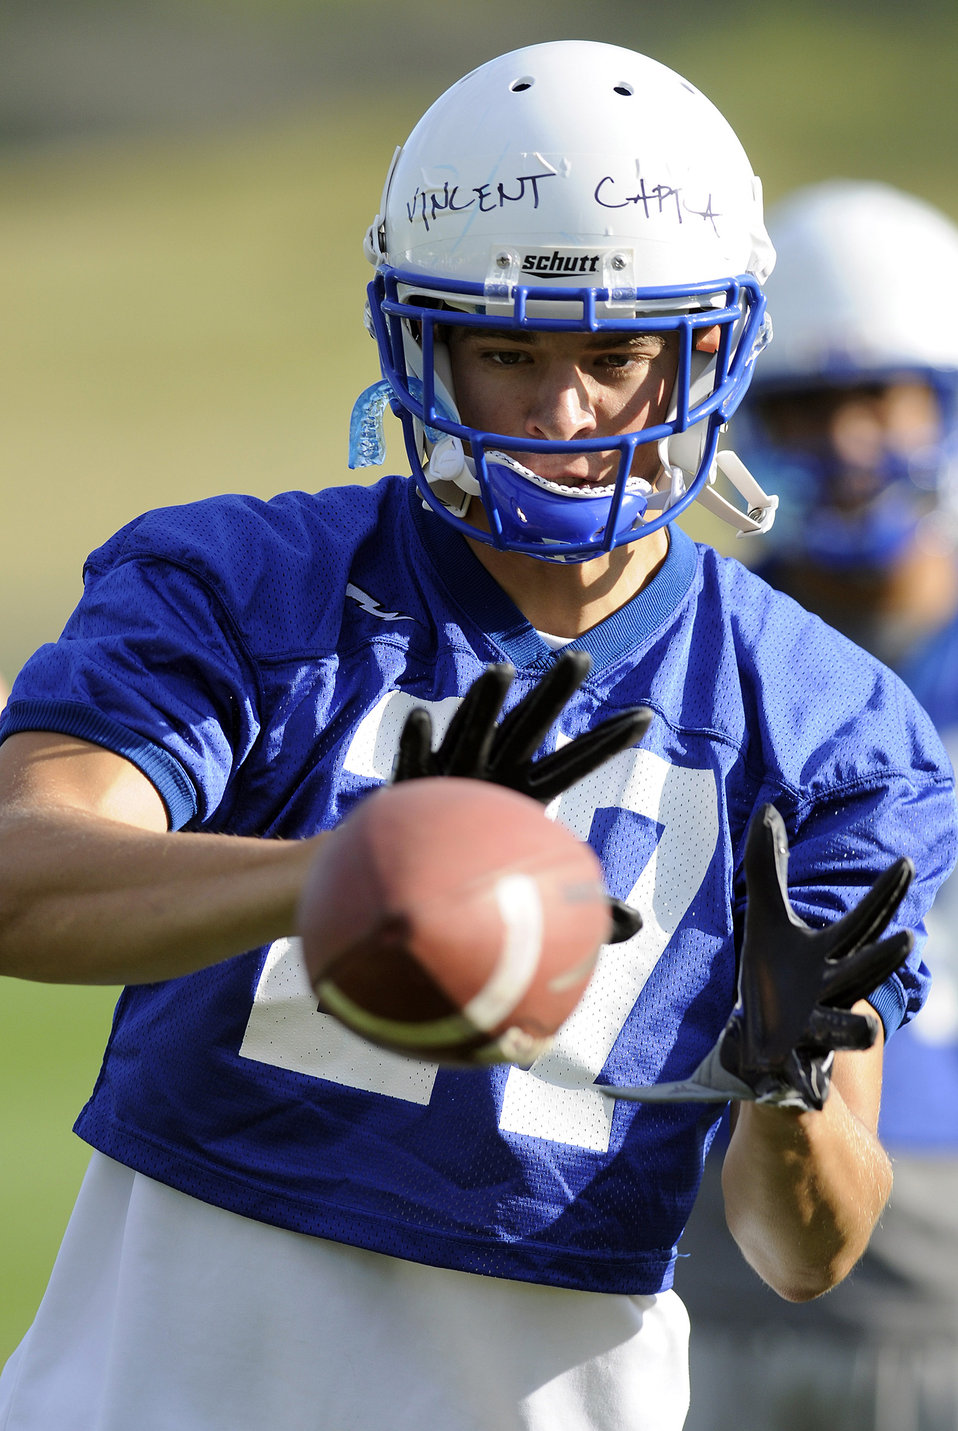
Academy football drills

U.S. Air Force Academy Sophomore Vincent Capra concentrates during pass catching drills during football practice Aug 4. The Falcons host the Nicholls State Colonels Sept. 5 in their home opener.